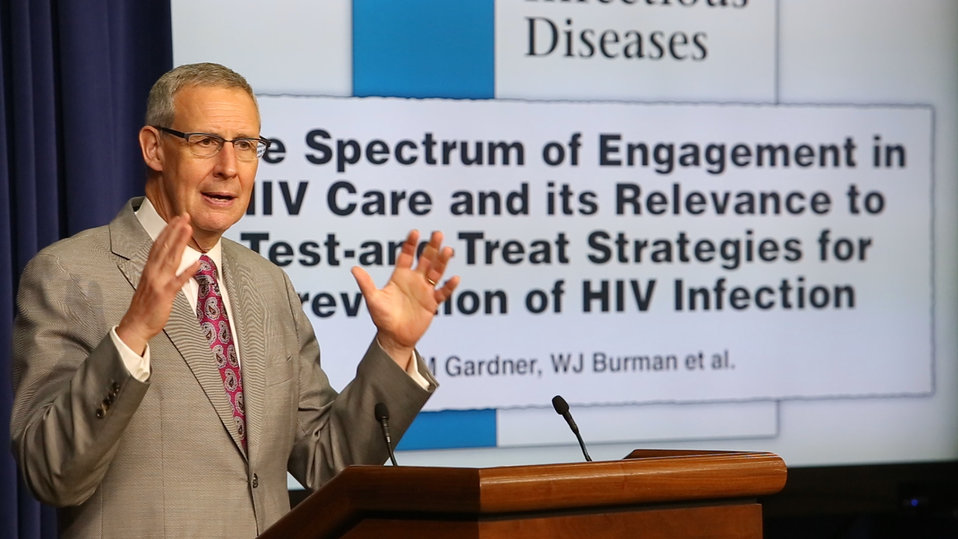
MVI 0180.MOV.Still007